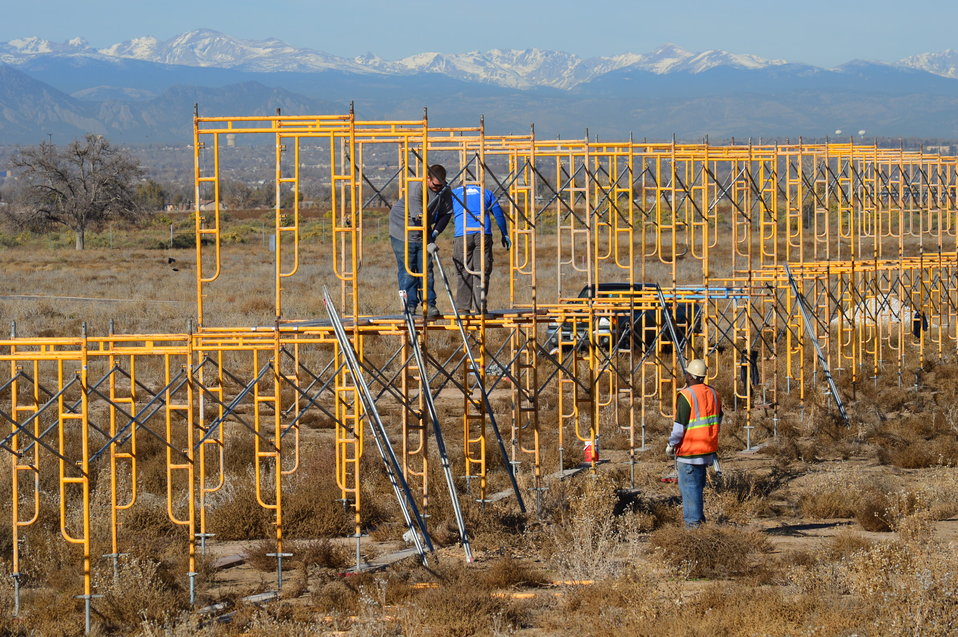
World Wildlife Fund (WWF) and International Fund for Animal Welfare (IFAW) constructing scaffolding which will display a life sized herd of elephants.